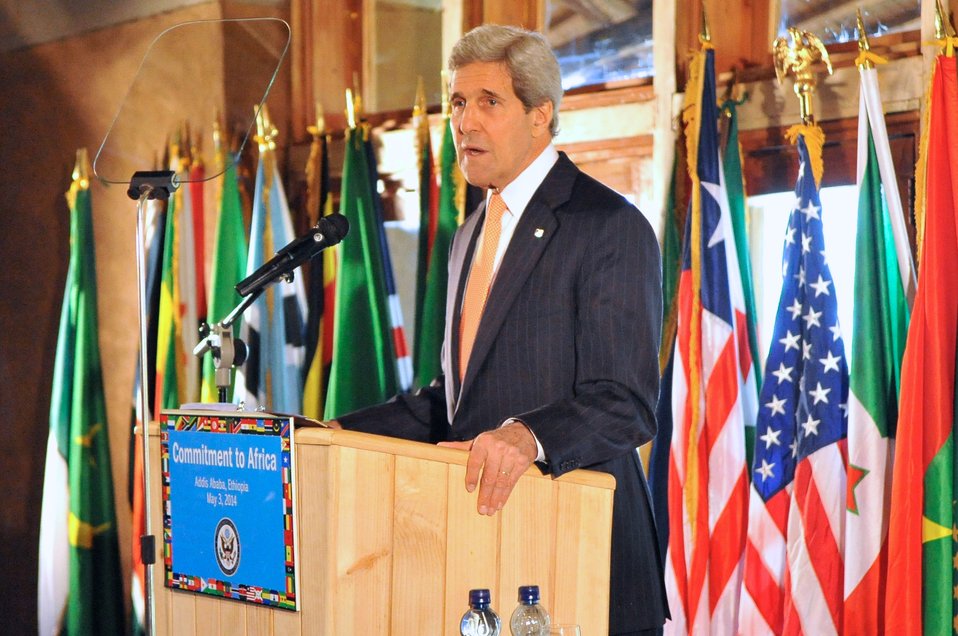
Secretary Kerry Delivers Speech About Africa Policy in Ethiopia

U.S. Secretary of State John Kerry delivers a speech about Africa policy in a botanical garden outside Addis Ababa, Ethiopia, on May 3, 2014.